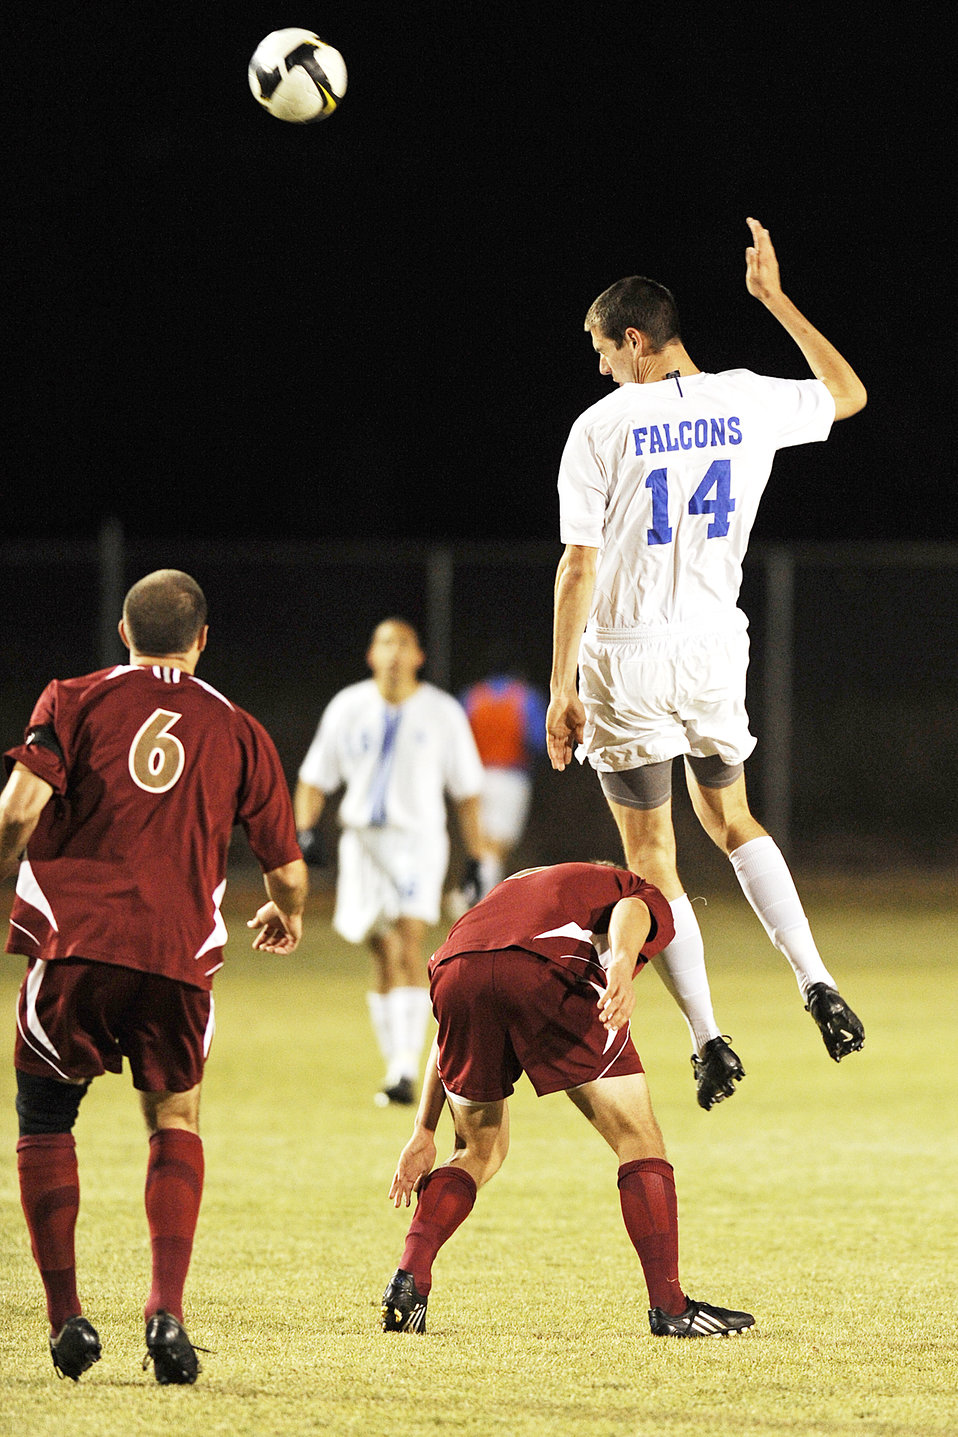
Air Force Academy

U.S. Air Force Academy, CO -- Senior Forward Steven Noller goes up for the header as the University of Denver defeated the Falcons 2-0 in the regular-season finale for both teams. The Falcons fell to 7-8-1, and 2-5 in league play. The two teams will meet again in five days in the first round of the MPSF tournament on Nov 12 at the University of Denver Stadium. Air Force finished the season with a 5-1-1 record at home, and honored its seven seniors in a pre-game ceremony celebrating the final home game of their career.